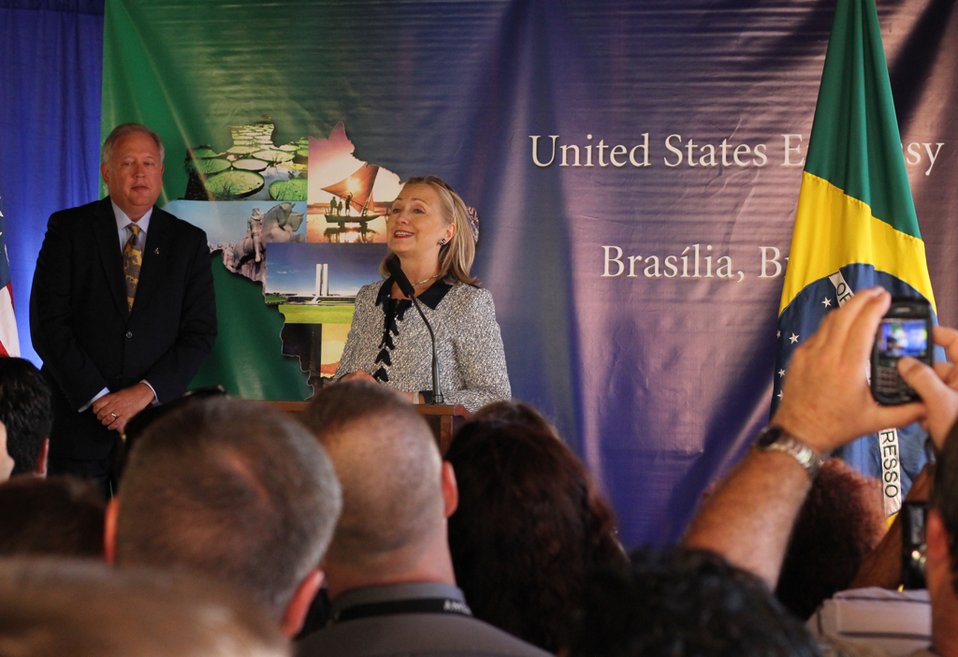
Secretary Clinton Addresses Embassy Brasilia Staff and Families

U.S. Secretary of State Hillary Rodham Clinton, flanked by U.S. Ambassador to Brazil Thomas A. Shannon, addresses the staff and families of the U.S. Embassy in Brasilia, Brazil, on April 16, 2012.